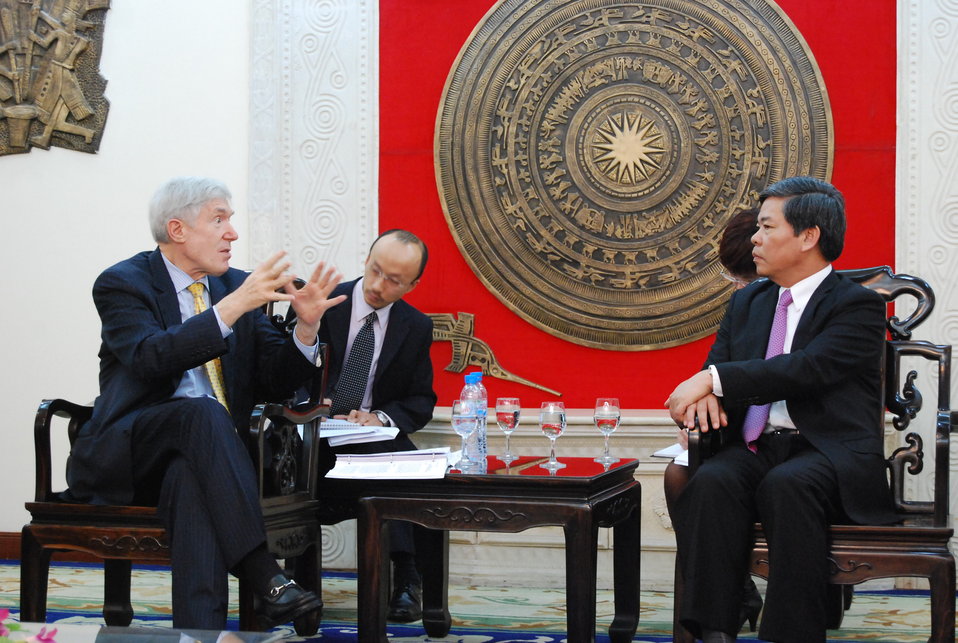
U.S.-Vietnam MOU on Low Emissions Development Strategies Signing Ceremony